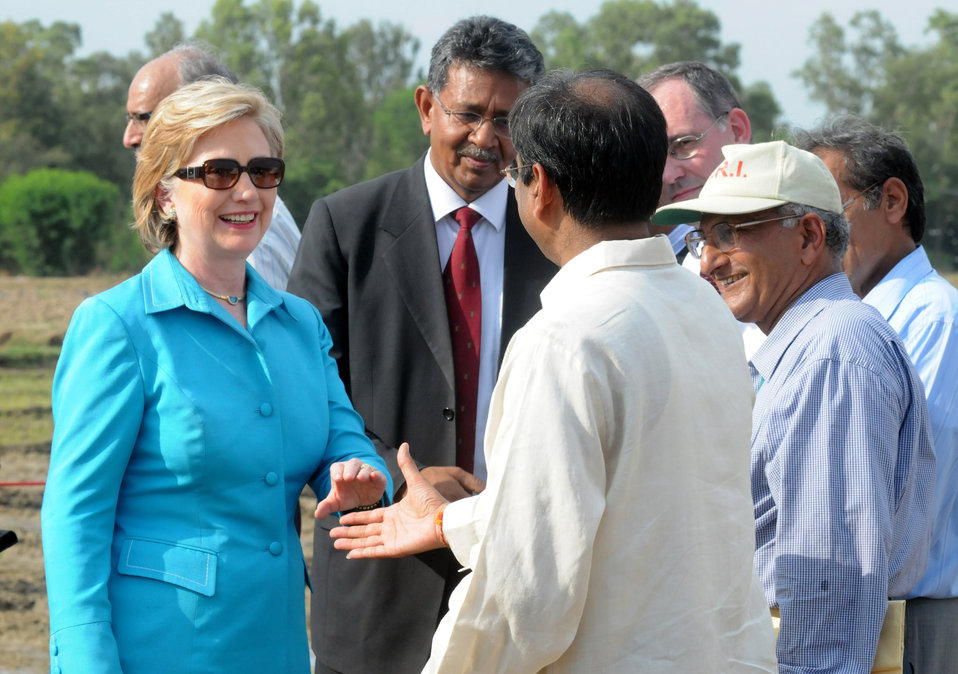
Secretary Clinton Visits Indian Agricultural Research Institute

U.S. Secretary of State Hillary Rodham Clinton is greeted at the Indian Council for Agricultural Research’s (ICAR) Indian Agricultural Research Institute (IARI) in Pusa, New Delhi, India July 19, 2009.